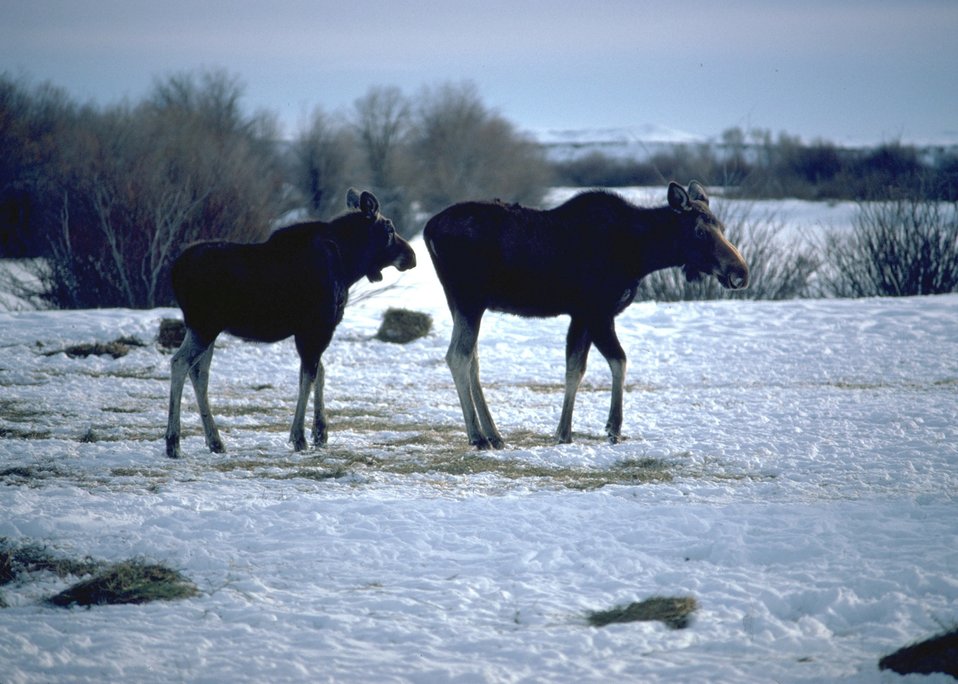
Moose walking along a snowy area.